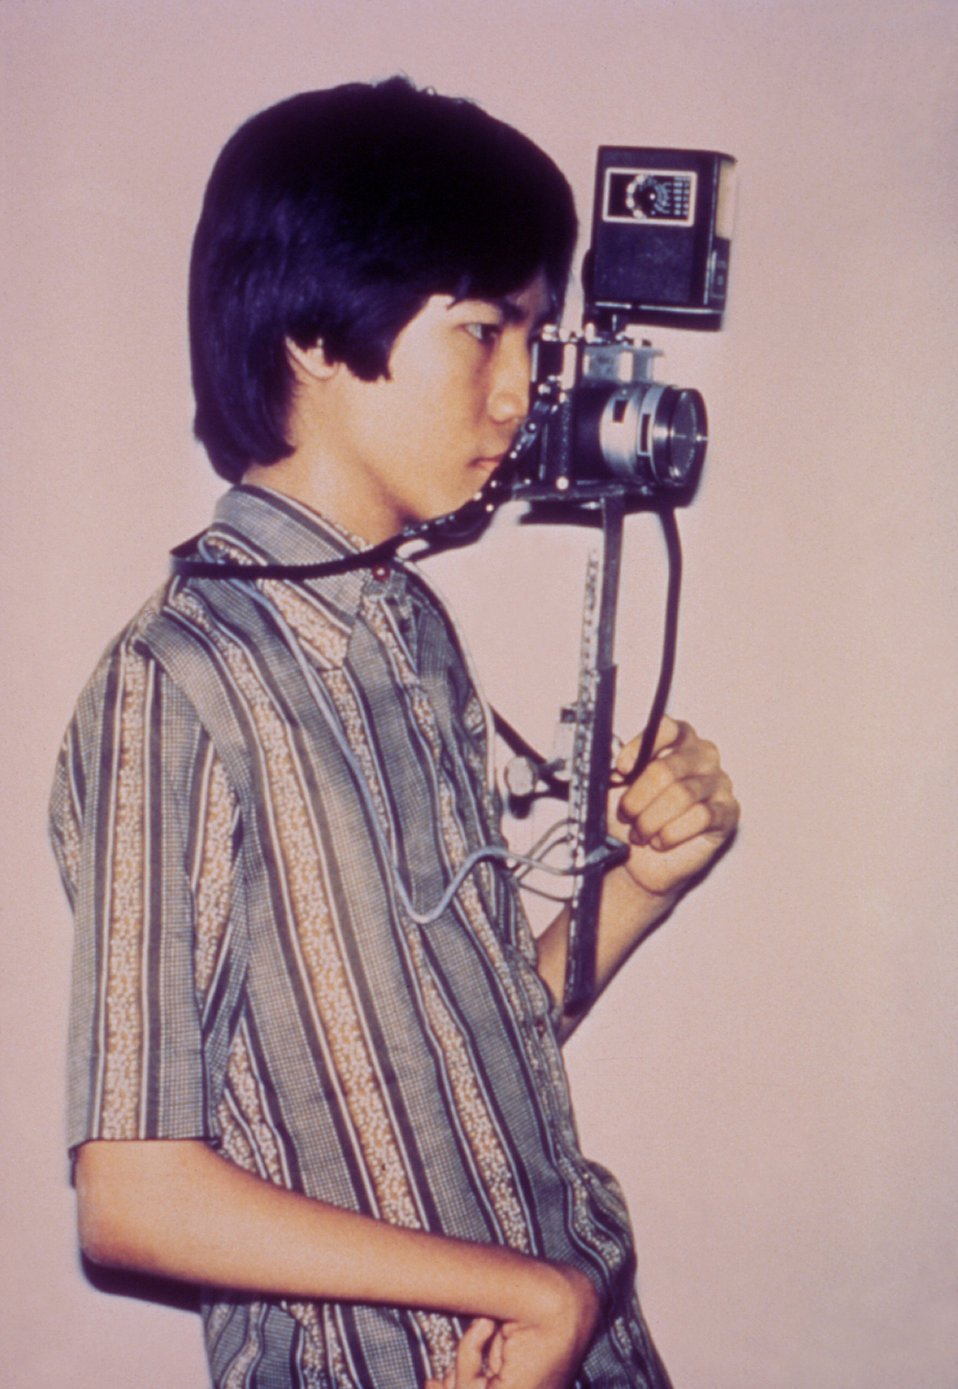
This patient sustained upper extremity paralysis due to the due to polio caused by the poliovirus, an enterovirus member.